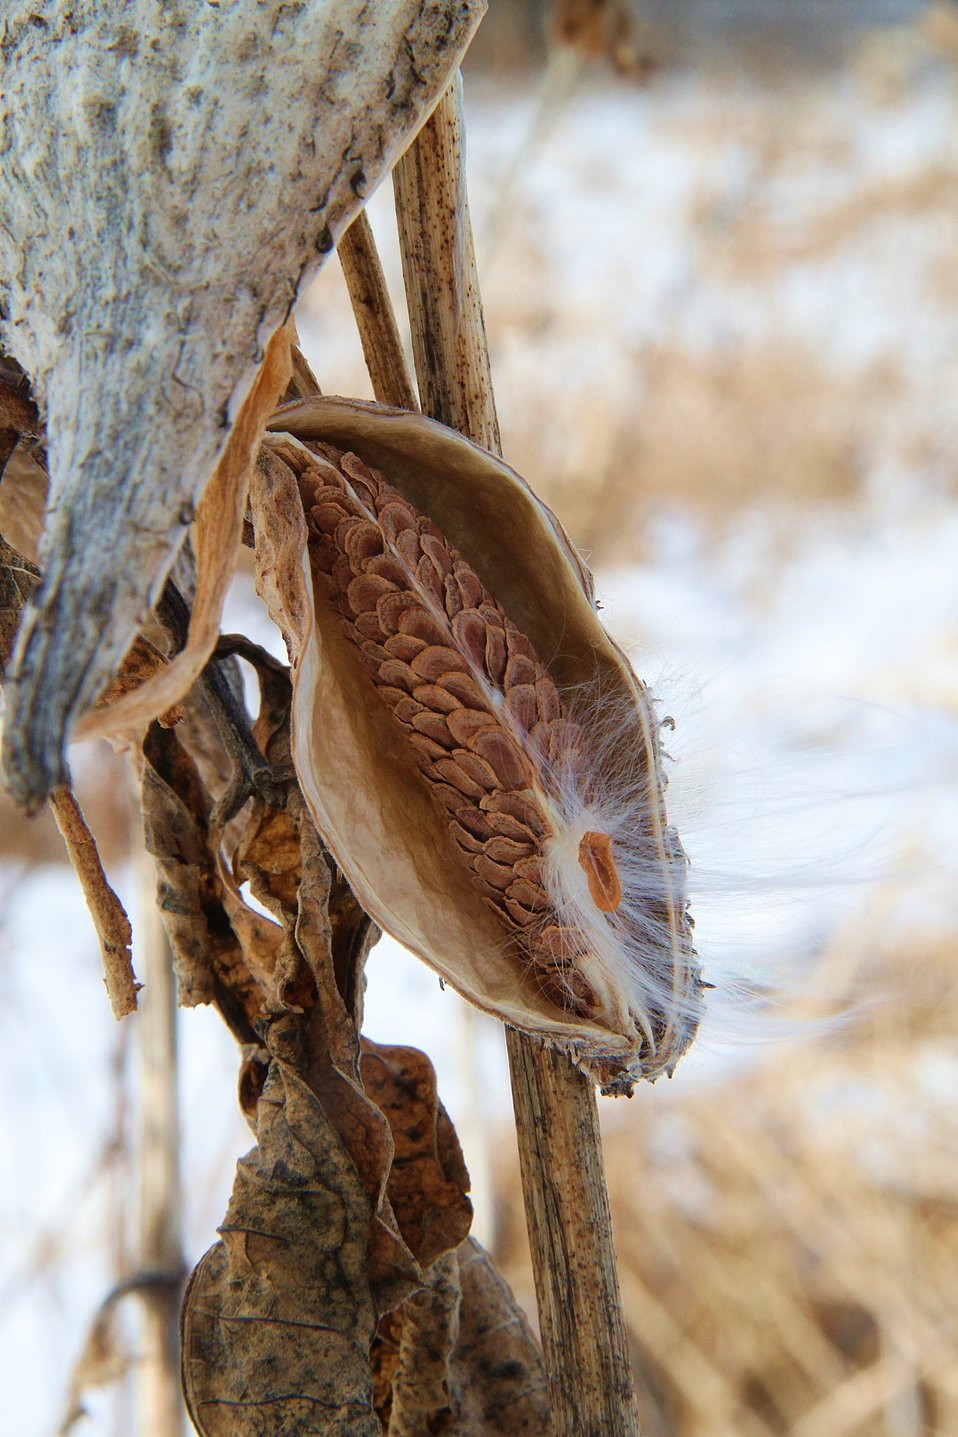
Springs promise in mid winter

Seeds of a milk weed ready to disperse at Missisquoi National Wildlife Refuge, Vermont